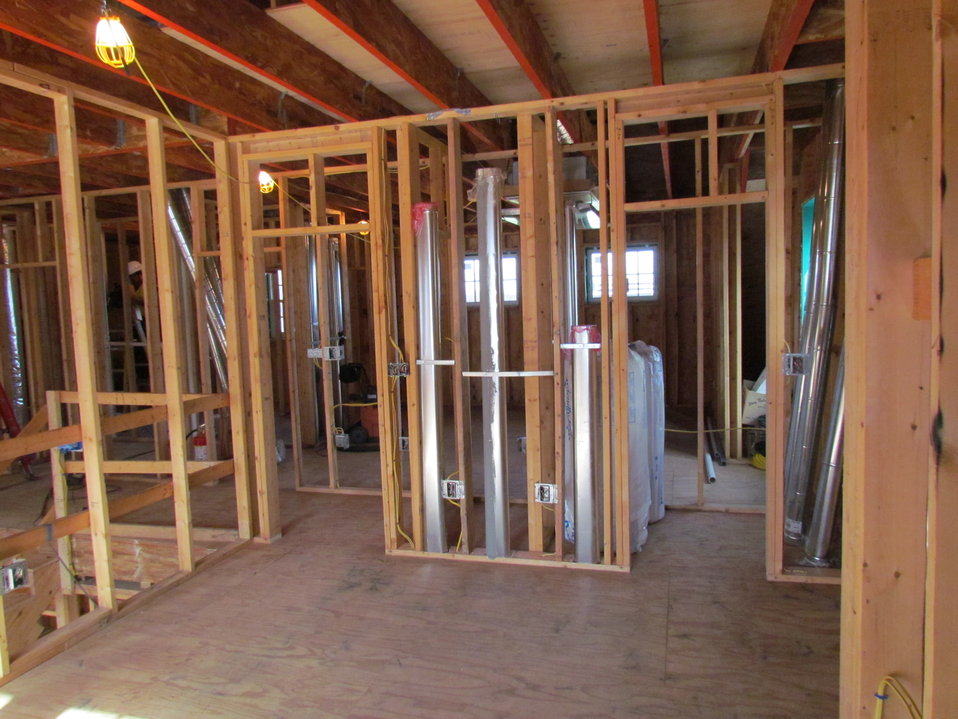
Net-Zero Energy Residential Test Facility – Photo taken in second floor of facility looking into master bedroom showing metal duct work and electrical wiring.